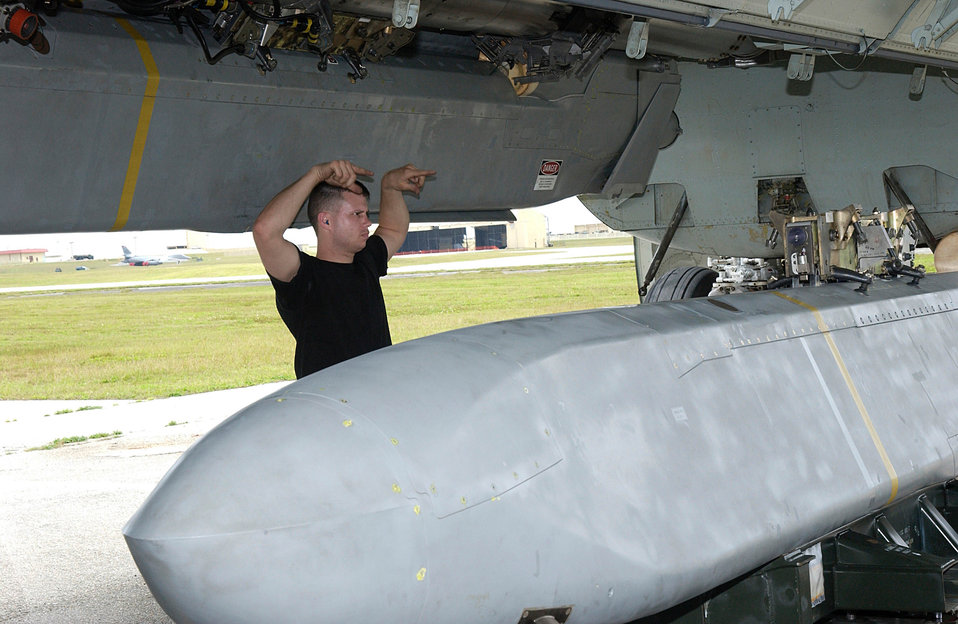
Perkins

ANDERSEN AIR FORCE BASE, Guam -- Staff Sgt. William Perkins, a weapons loader, controls the loading of an air-launched cruise missile into the belly of a B-52 Stratofortress on March 20. B-52s and support troops from the 2nd Bomb Wing at Barksdale Air Force Base, La., are deployed as part of the 7th Air Expeditionary Wing.